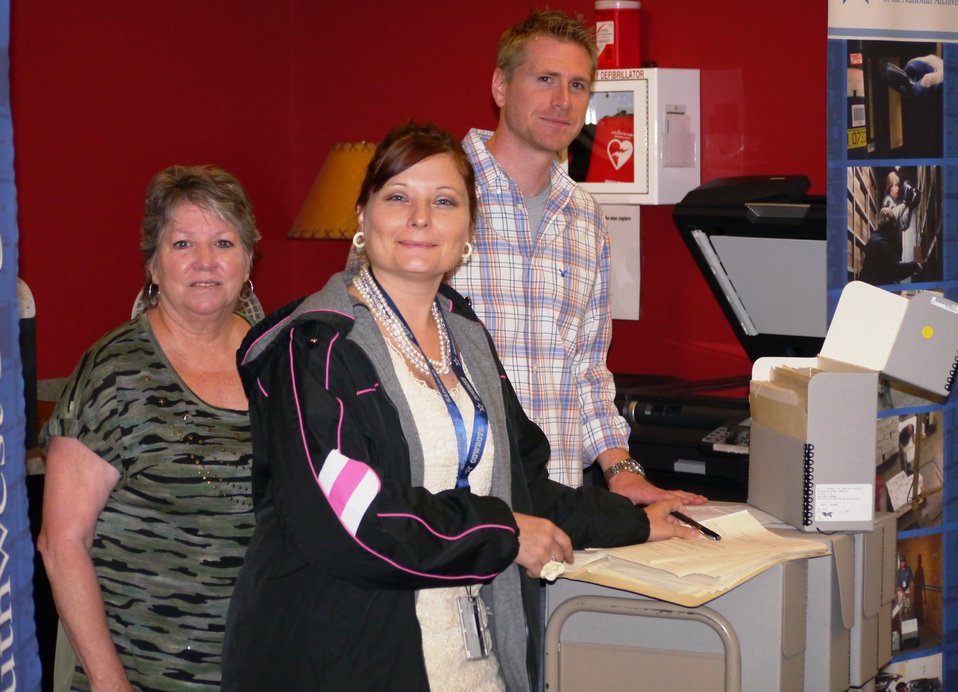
LaVerne Owens, Melinda Johnson, Michael Wright work on a scanning project; Location: John Burgess Facility, National Archives at Fort Worth, Fort Worth, TX